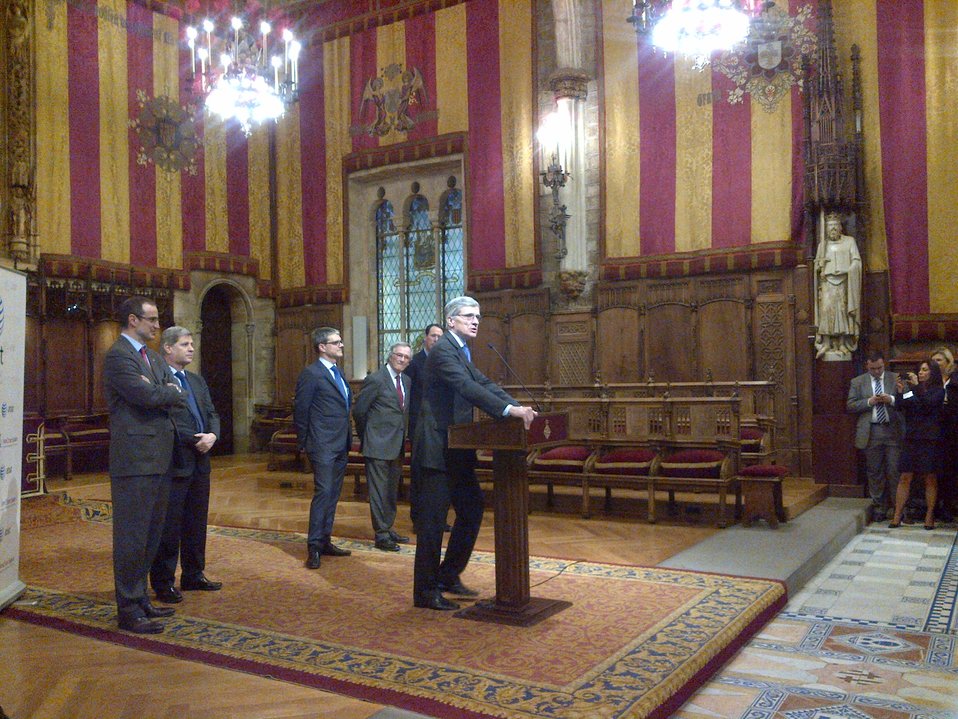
FCC Chairman Wheeler delivering remarks on Tuesday, February 25, 2014 at the American Chamber of Commerce in Barcelona, Spain.